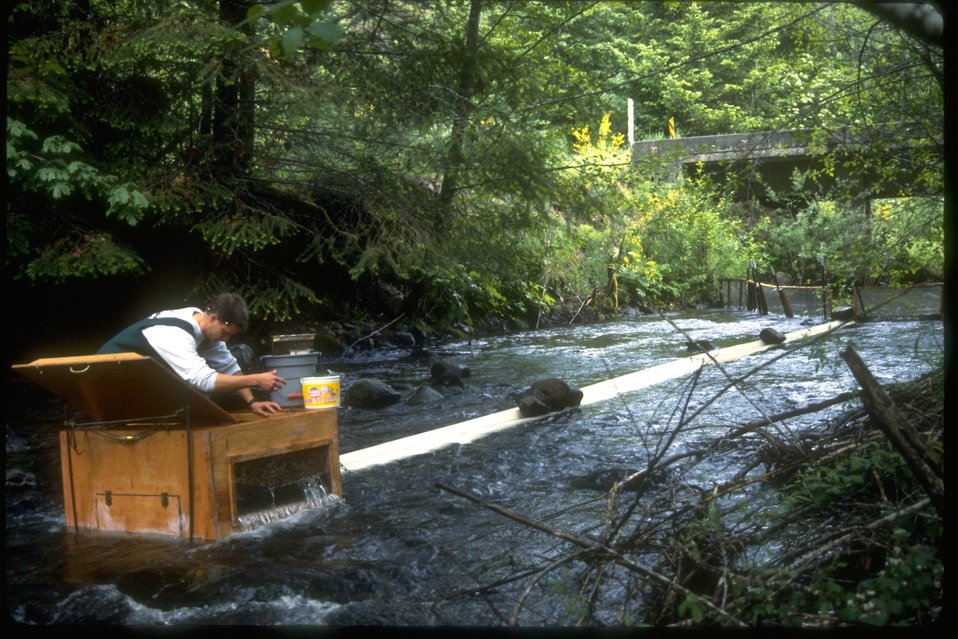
Fisheries research.